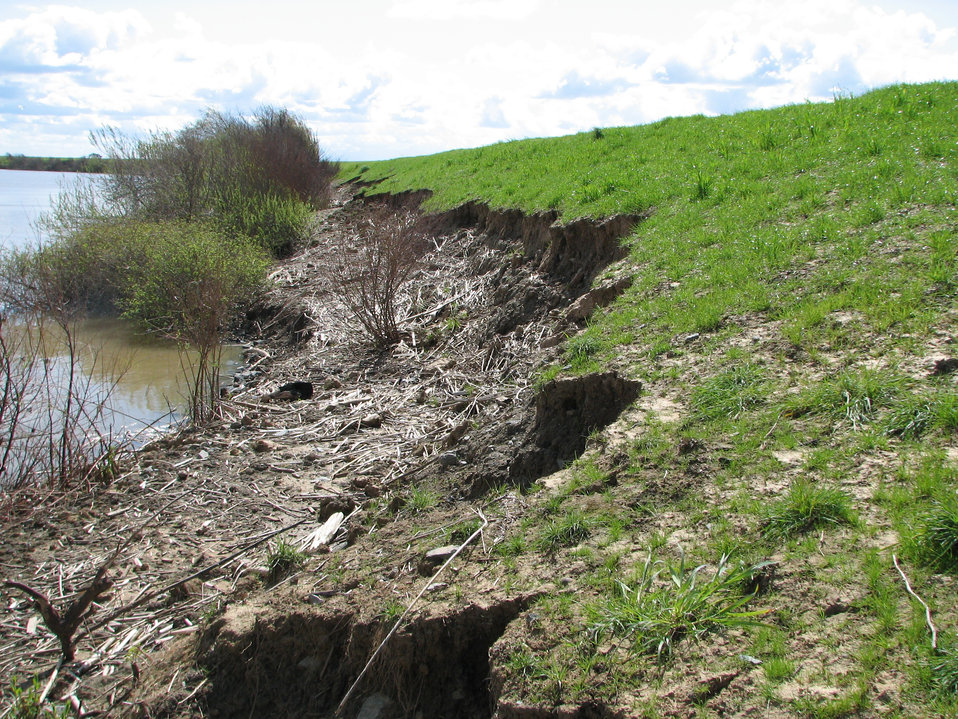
River Erosion in the Central Valley

Levee erosion in California’s Central Valley, shown Dec. 1, 2005, following high river flows from heavy winter storms. The U.S. Army Corps of Engineers Sacramento District completed emergency erosion repairs between 2007 and 2009.